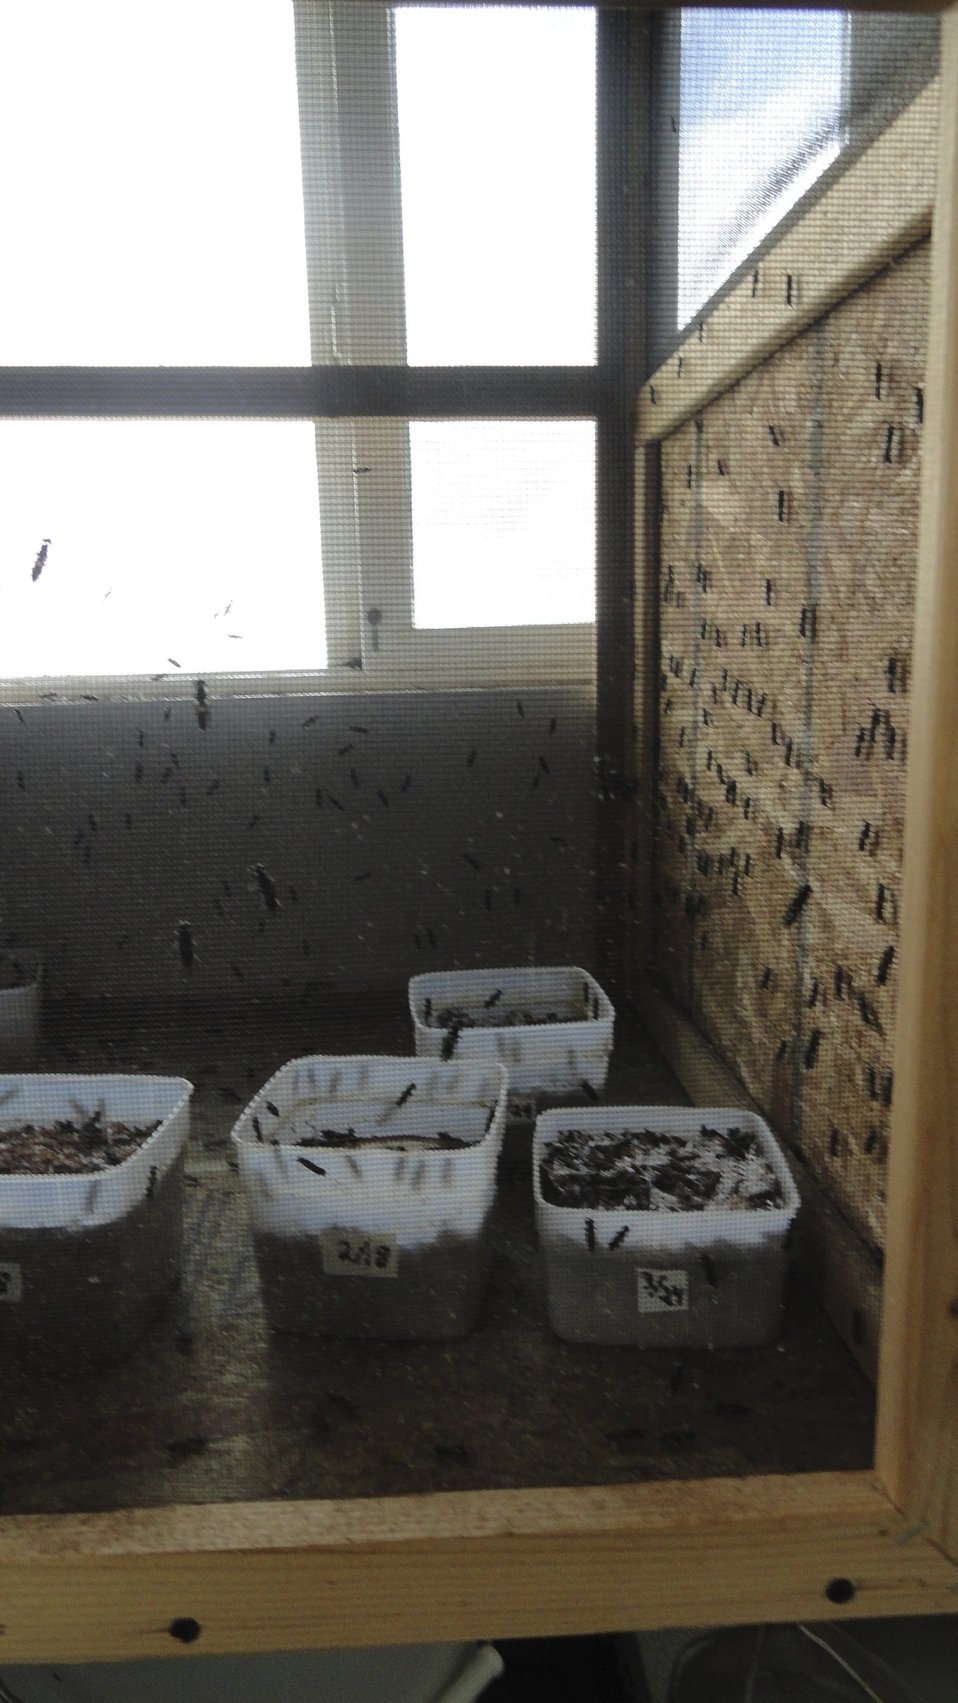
Visiting Saratoga National Fish Hatchery

In April of 2014, regional office employees visited Saratoga National Fish Hatchery to learn more about its efforts towards recovering the Wyoming toad (Bufo baxteri).

The hatchery adopted a unique role in becoming the first unit in the National Fish Hatchery System to become involved in rearing endangered amphibians. The Wyoming toad was a common sight on areas of the Laramie Plains, Albany County, Wyoming, into the early 1970s but the species' populations crashed in the mid-1970s. The Wyoming toad was listed as endangered by the U.S. Fish & Wildlife Service in January 1984. Found only in southwestern Wyoming, the Wyoming toad is considered the most endangered amphibian in North America. The hatchery maintains a captive population for breeding, rearing, and refugia, and the offspring from this program will be used for reintroduction efforts.